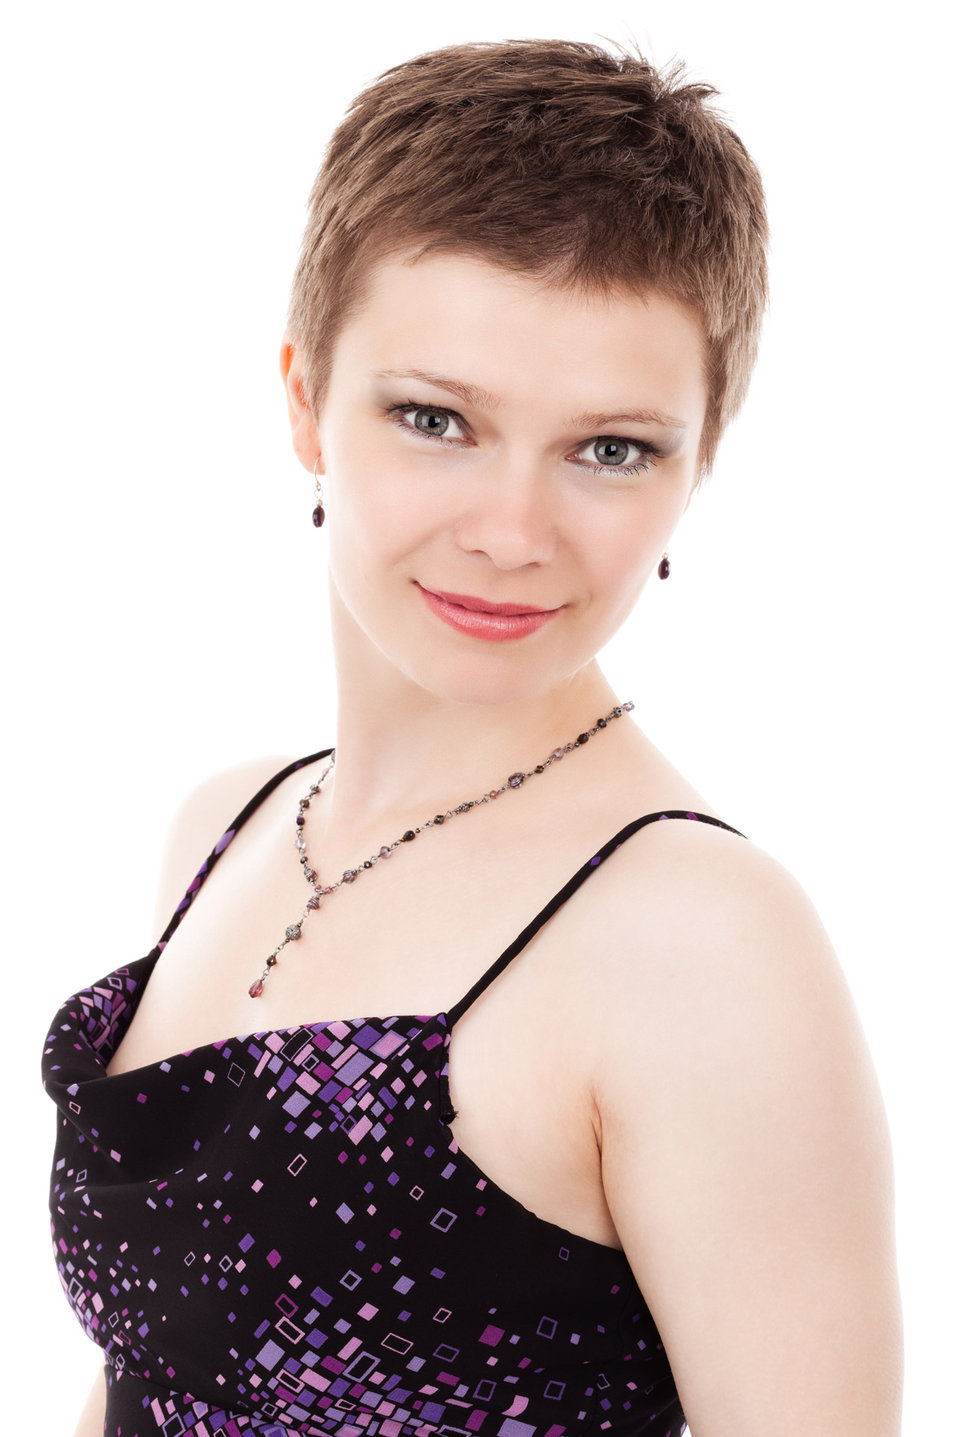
Fashion model portrait

Female fashion model is posing isolated on white background..